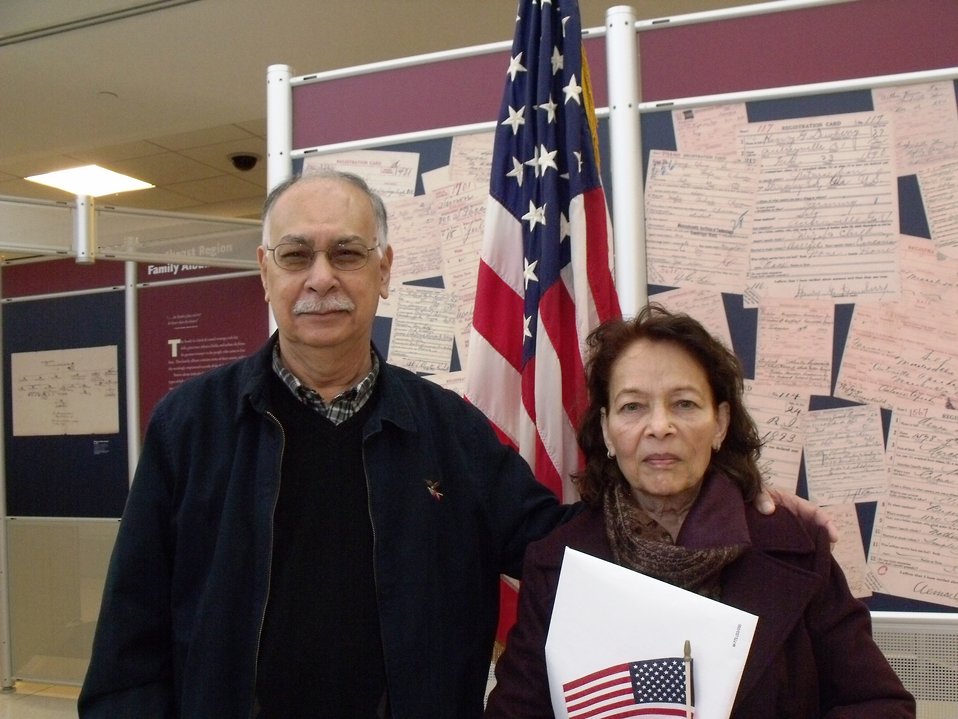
New Citizens